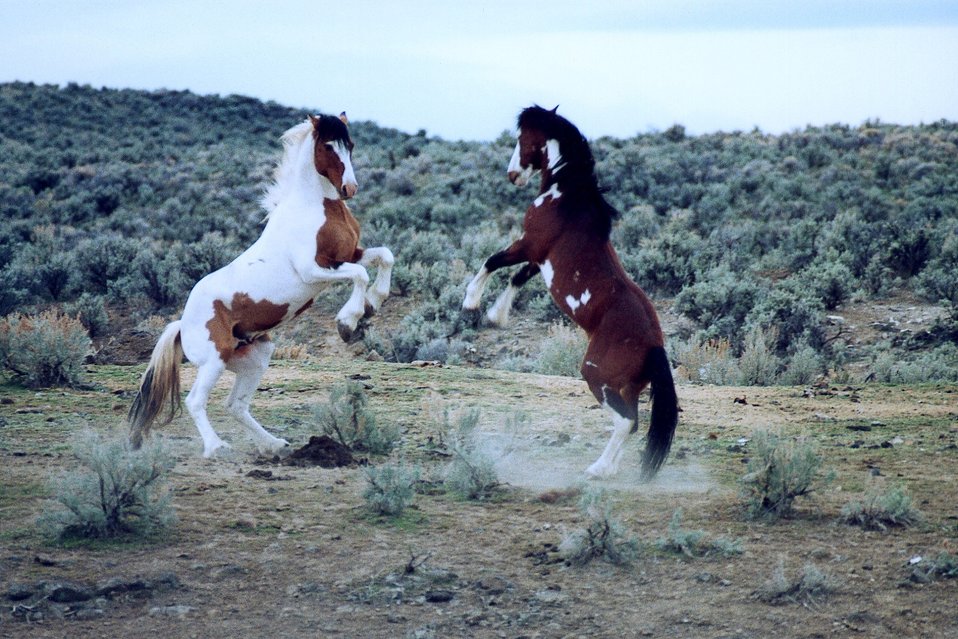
Medium shot of two bachelor stallions playing.